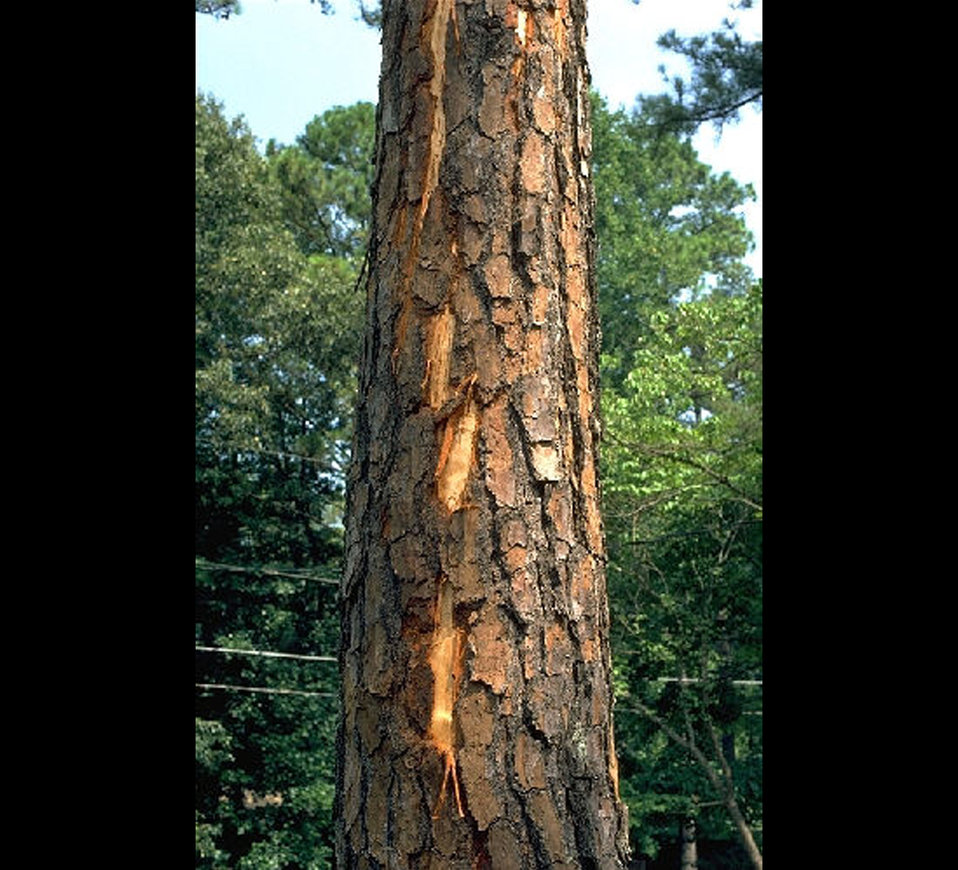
Pine tree damaged by lightning, Atlanta, Georgia.